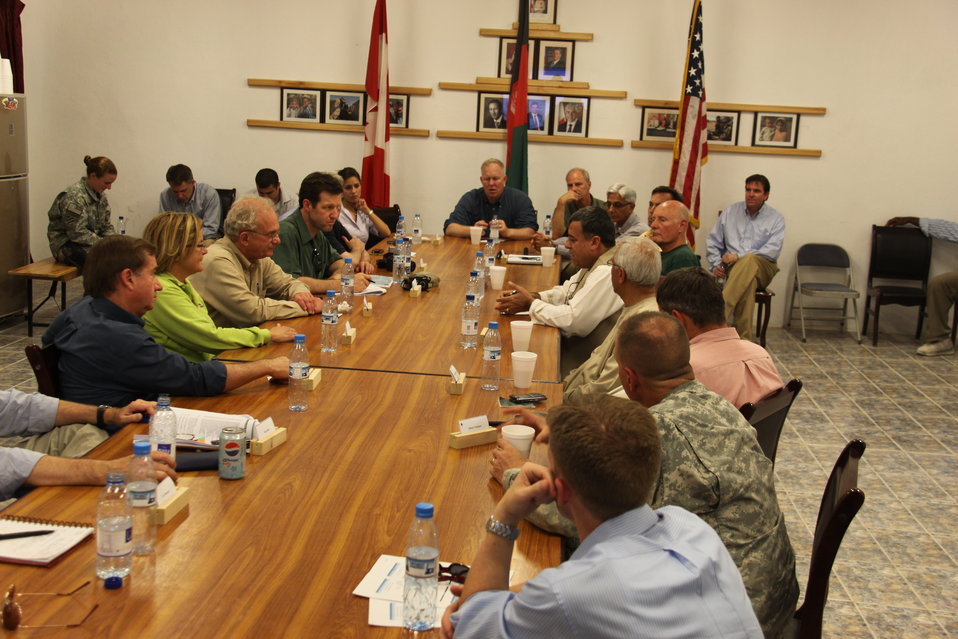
Meeting with Local Leaders in Kandahar